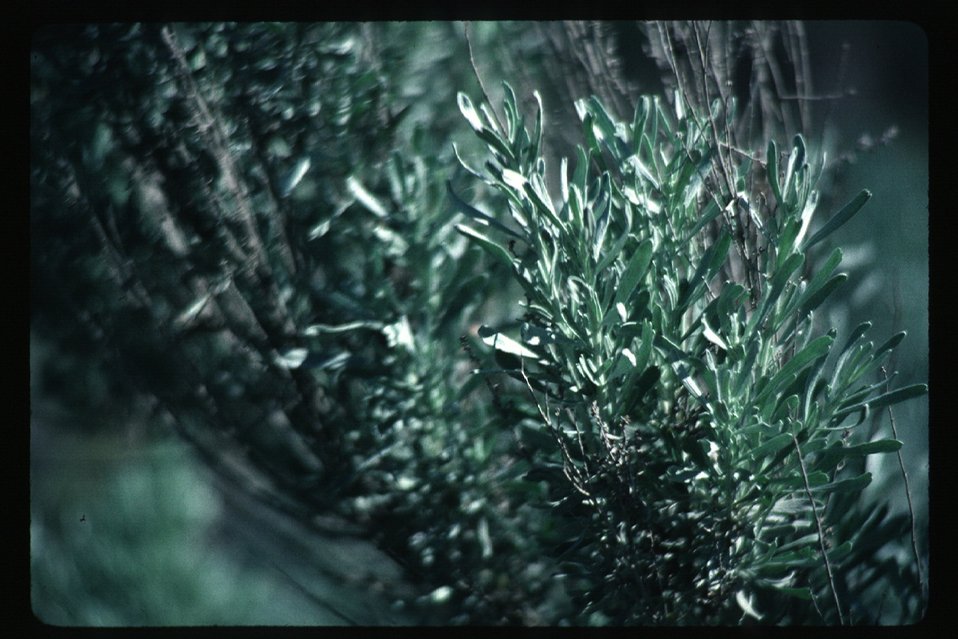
Wild plants Scenic LSRD Lower Snake River District